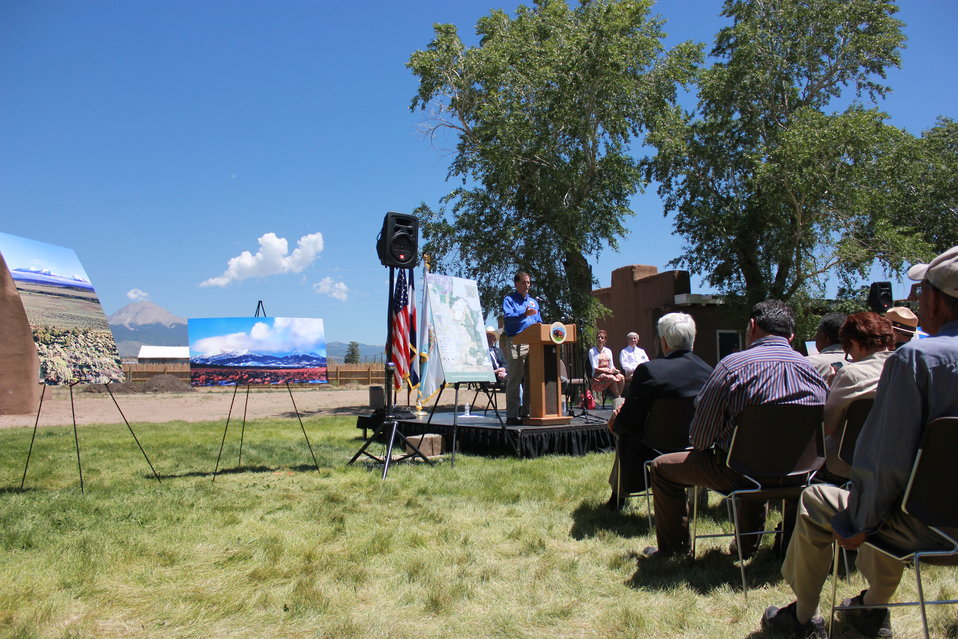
Historic Conservation Easement in Sangre de Cristo Mountains